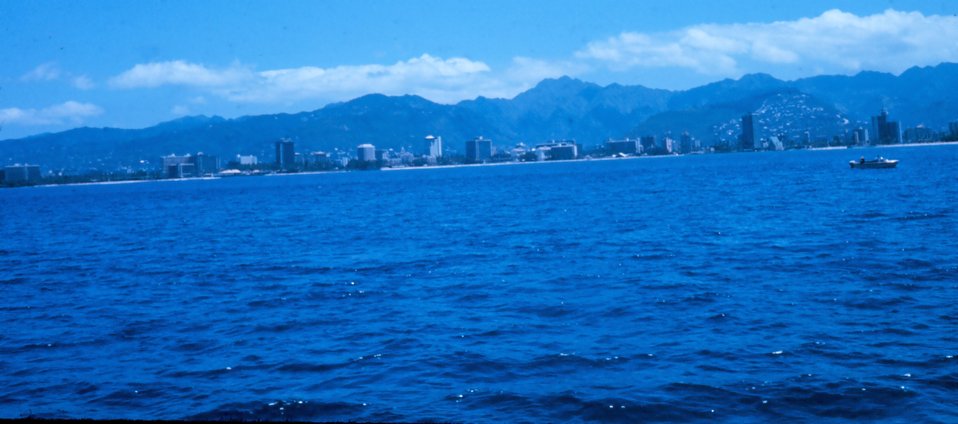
Honolulu skyline